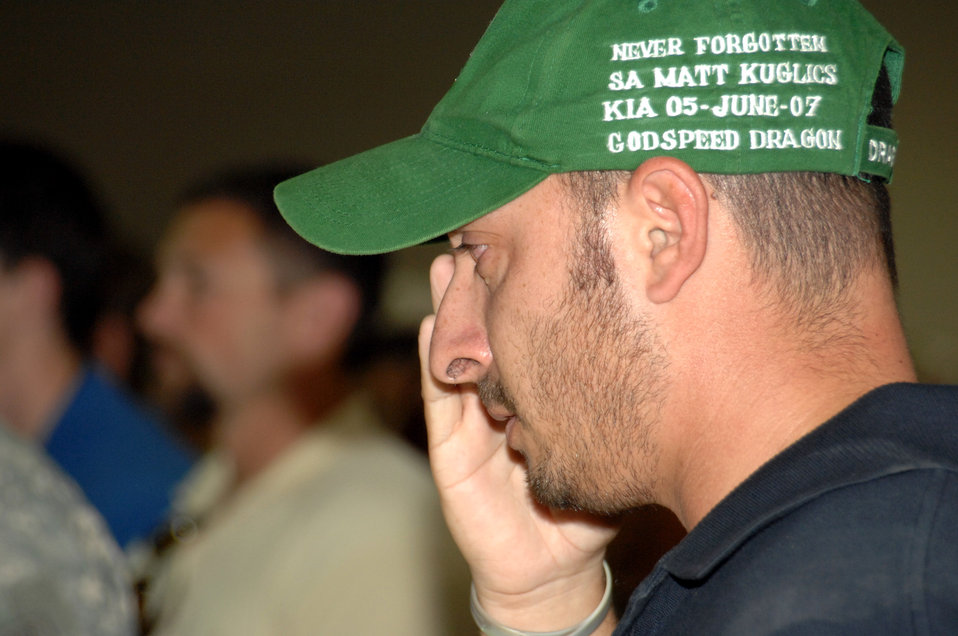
Final tributes paid to Airmen killed in Iraq

Special Agent Ryan salutes during a memorial ceremony June 8 honoring Special Agents Tech. Sgt. Ryan Balmer and Staff Sgt. Matthew Kuglics at Kirkuk Regional Air Base, Iraq. The agents were killed in action June 5 while supporting Operation Iraqi Freedom. Agent Ryan's hat is embroidered in tribute to his lost friend, Agent Kuglics.